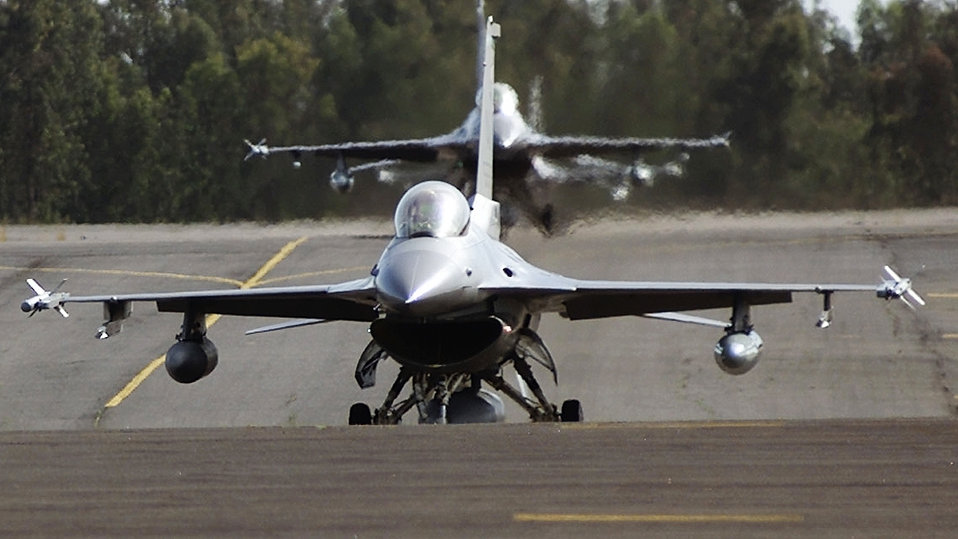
Arrival

SIDI SLIMANE AIR BASE -- F-16 Fighting Falcons from the 555th Fighter Squadron, Aviano Air Base, Italy, arrived here, in support of Exercise African Eagle. African Eagle is a bi-annual exercise designed to practice dissimilar air to air training with the Royal Moroccan air force.